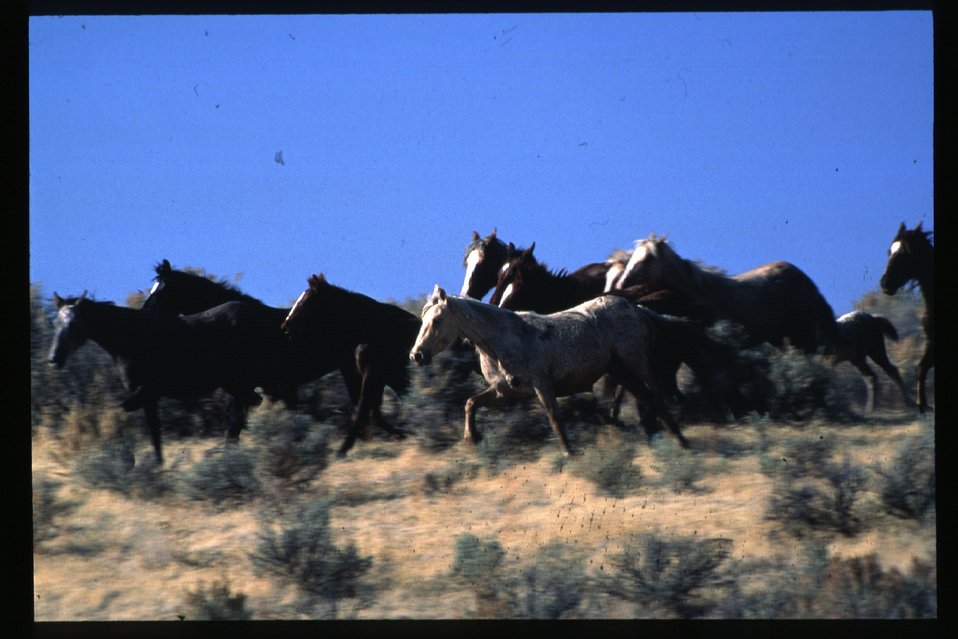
Wild horse and burro Corral roundup WHB LSRD Lower Snake River District